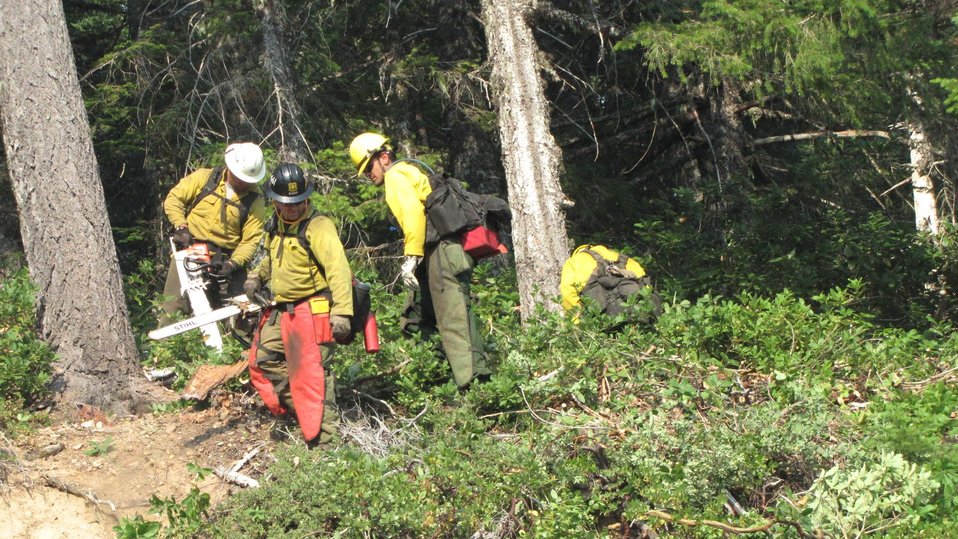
Fire crew works to clear area to prevent spread of the Big Windy Complex Fires. The Big Windy Complex Fires consists of three fires: The Big Windy Fire, Calvert Peak Fire, and Jenny Fire (formerly the Windy 16 Fire) near Grants Pass, OR. The fires began on Jul. 26, 2013 by lighting have consumed approximately 7, 499 acres.